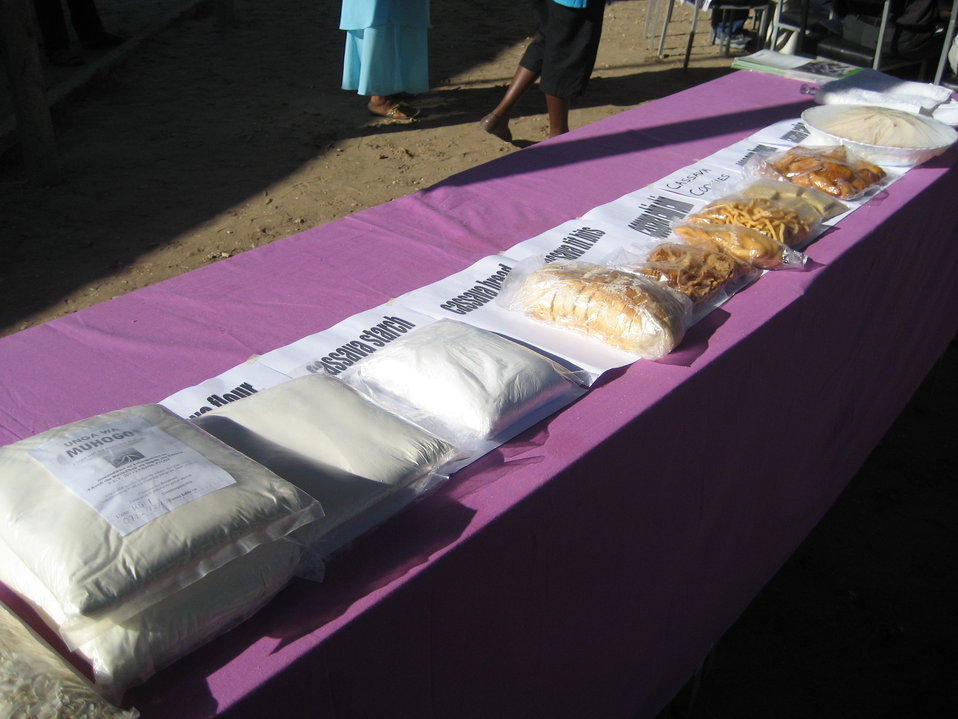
Deputy Secretary Neal Wolin’s trip to Africa 2009

From starch to flour, cookies to cake, bread to buns -- a variety of locally made cassava products.